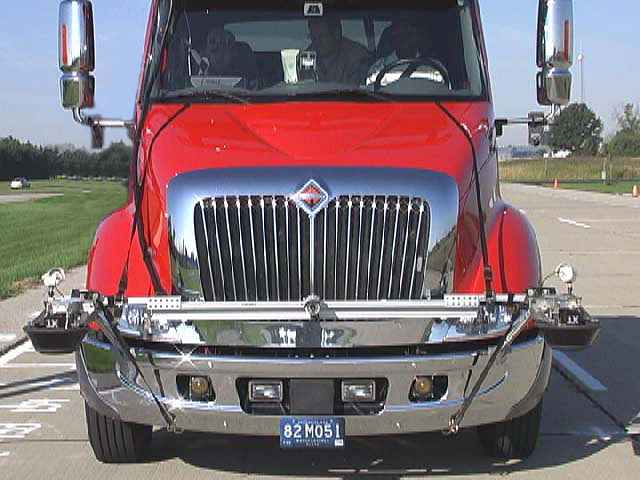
NIST IV IMS on Eaton heavy truck

Truck cab instrumented for NIST tests of collision warning systems.